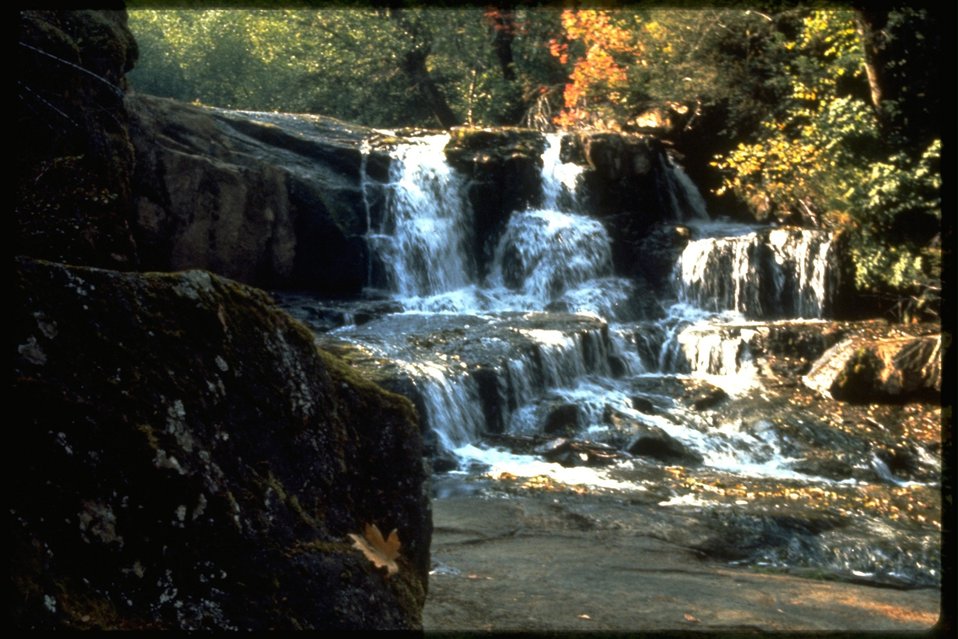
A scenic picture of the Alsea Falls.